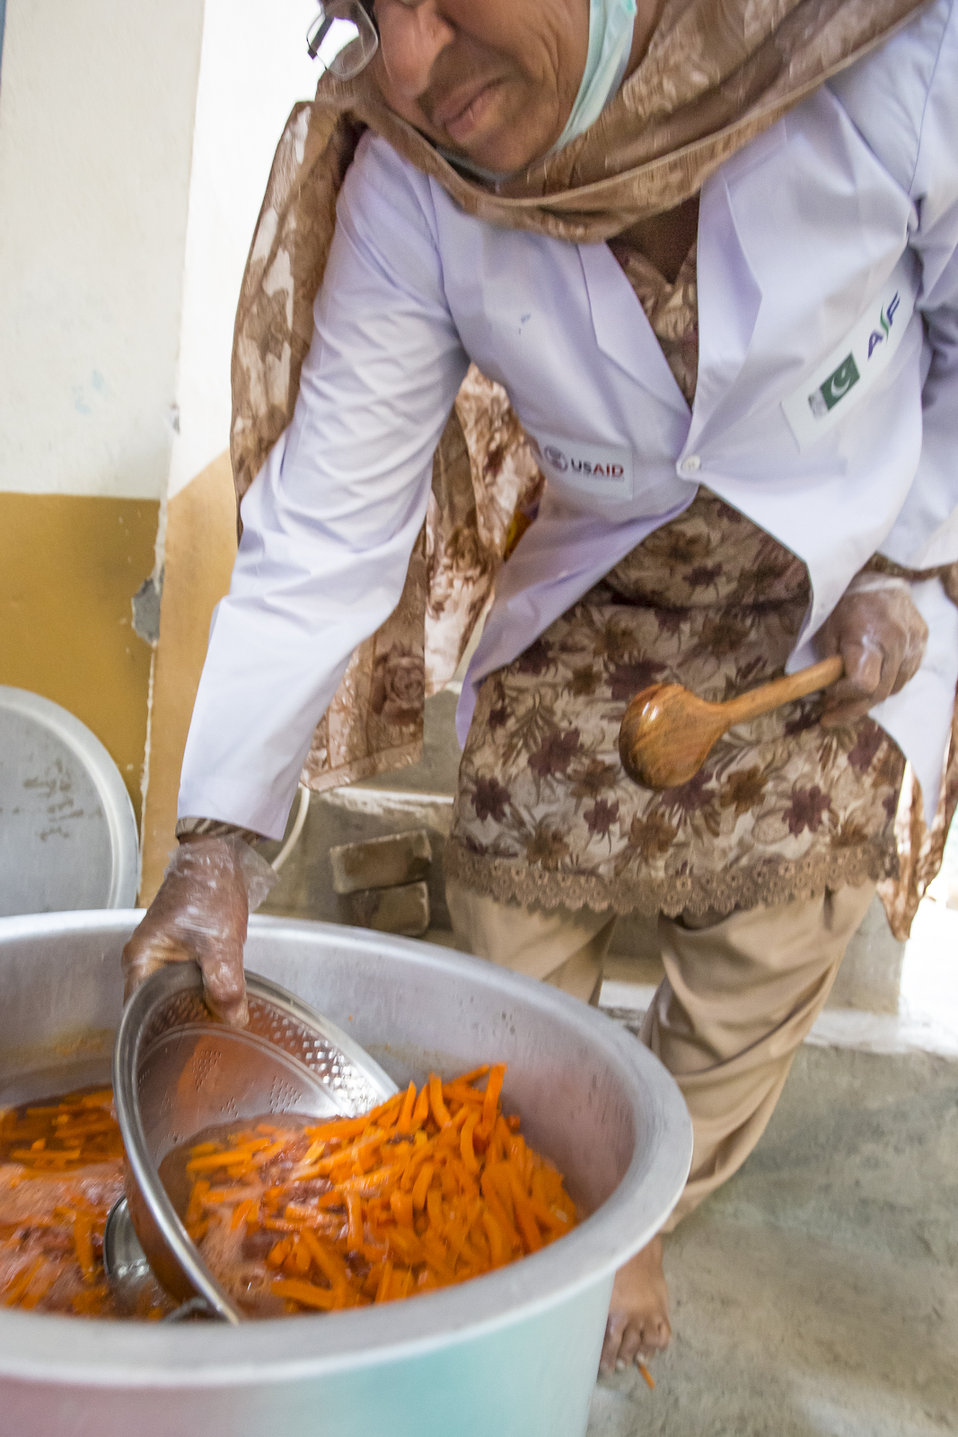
USAID's Agribusiness Project Women FEG for Food Processing - Pickle Production at Village Jabbi

Second was the six-day technical training, for which pickling experts were brought in.
www.usaid.gov/pk/db/sectors/growth/project 750.html